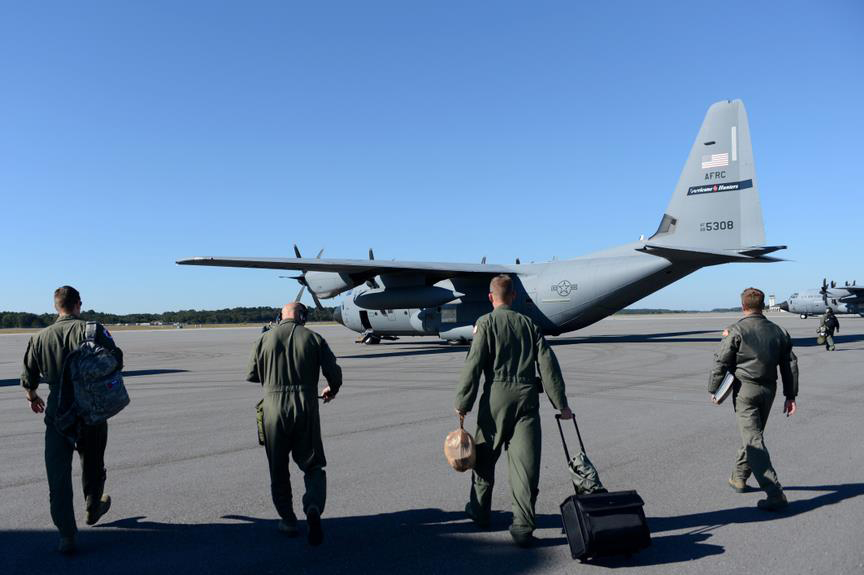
Hurricane Sandy

A WC-130J Hercules crew from the 53rd Weather Reconnaissance Squadron walk to their aircraft for a weather reconnaissance mission into Hurricane Sandy Oct. 29, 2012, at Hunter Army Airfield, Ga. The 53rd WRS conducted weather reconnaissance missions in preparation for Hurricane Sandy making landfall along the Eastern coastline of the United States.